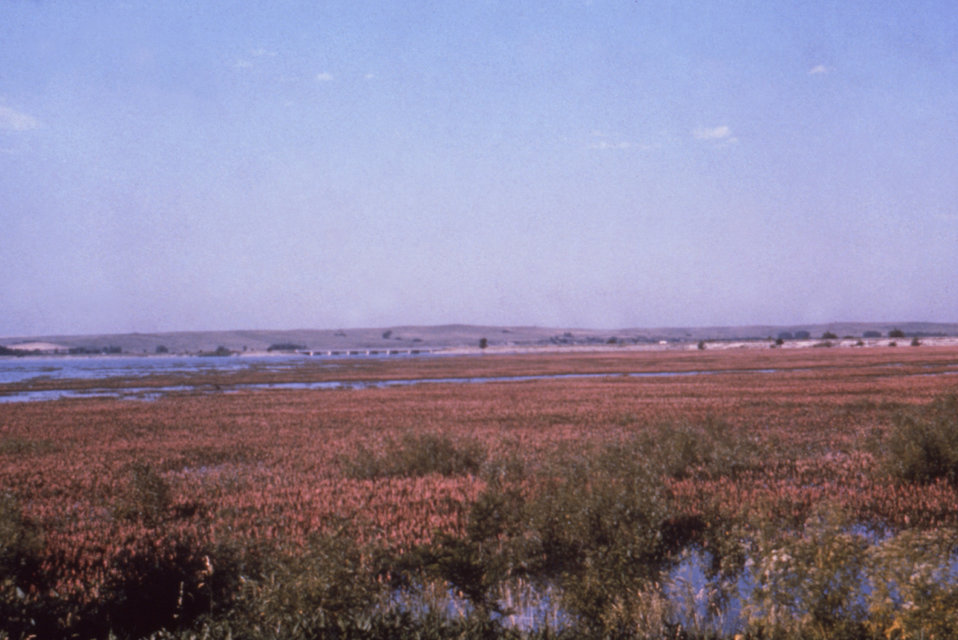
This 1976 photograph shows the pink-flowered vegetation at the edge of a lake near the Harlan County Reservoir in Nebraska.